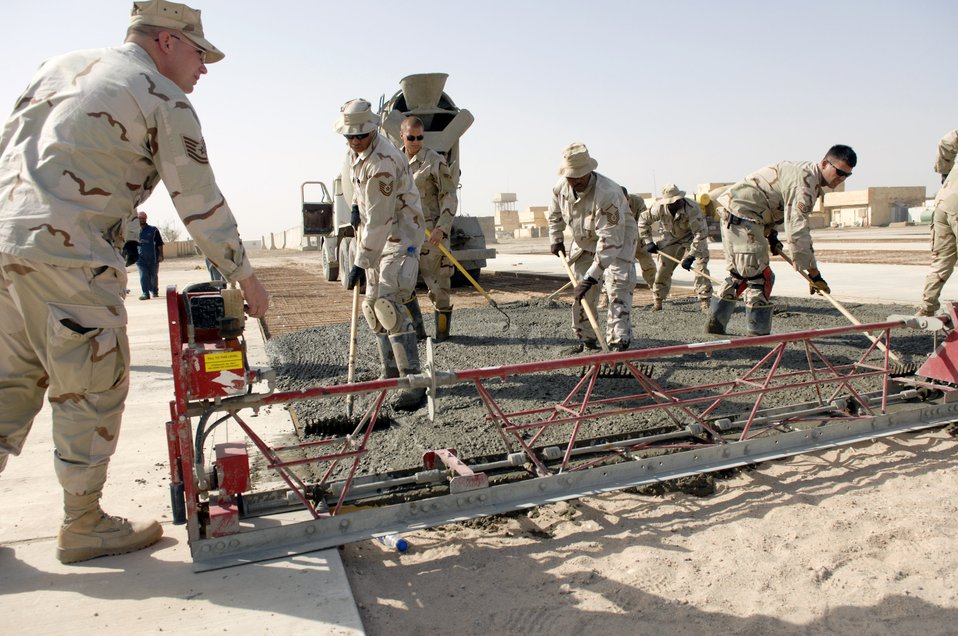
Civil engineers pave the way for Iraqi Army

Airmen from the 407th Expeditionary Civil Engineer Squadron at Ali Air Base, Iraq, level freshly poured cement June 11 while building a drill pad at Camp Mittica, Iraq. The 407th ECES is on the Iraqi base constructing a cement drill pad that will be used by the Iraqi army to train their enlisted soldiers.